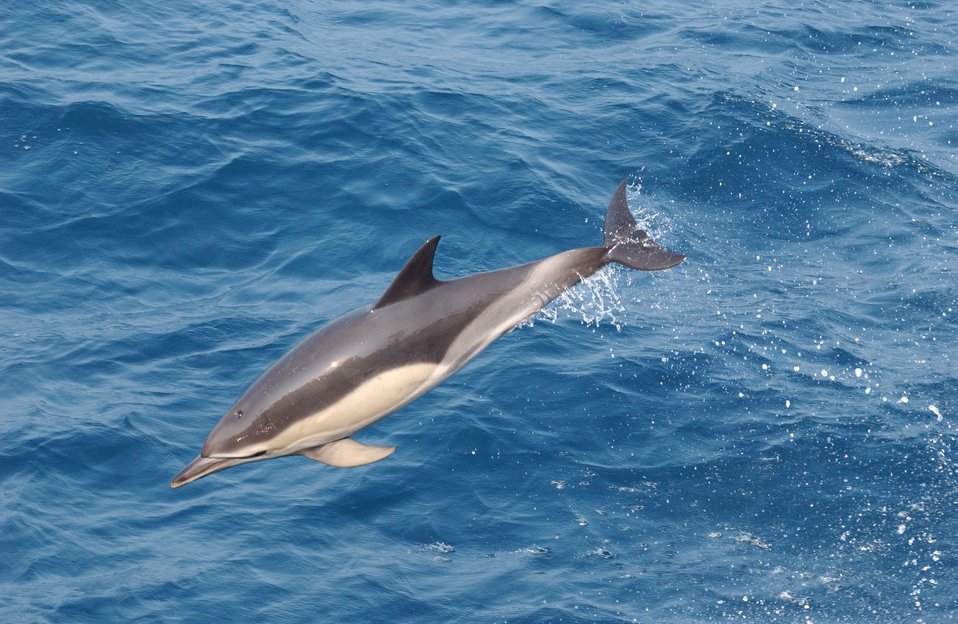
Common dolphin